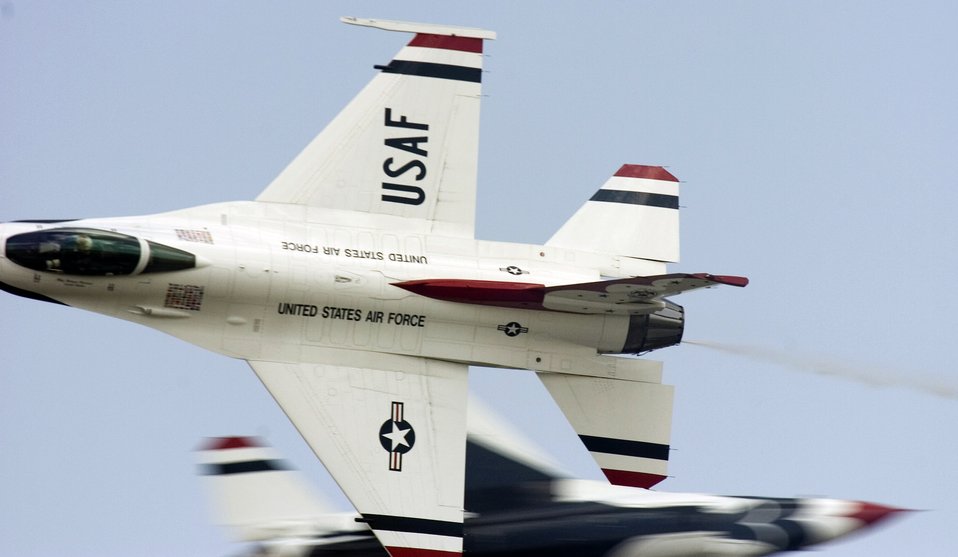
Air Force Week concludes in St. Louis

Thunderbirds No. 5 and 6 pass perform an opposing knife pass during a practice show at Scott Air Force Base, Ill., on Aug. 11.